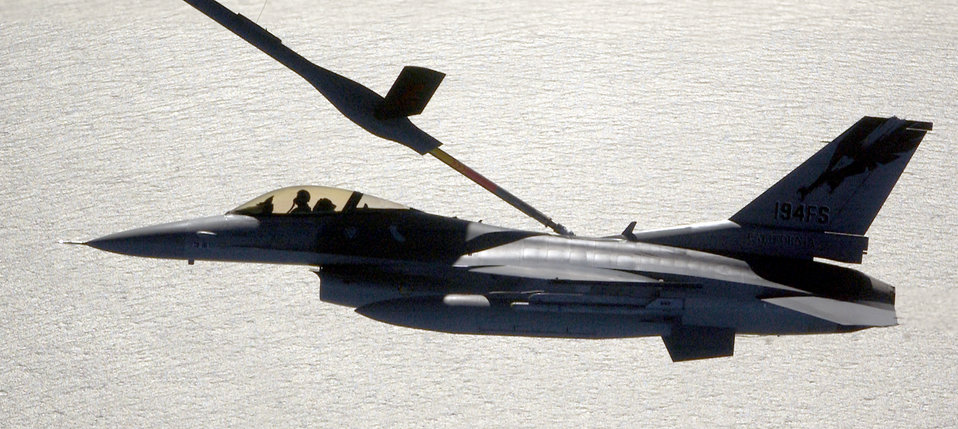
Noble Eagle

OVER THE SAN FRANCISCO BAY -- Major Rob Swertfager gets his F-16 Fighting Falcon refuled by a KC-135E Stratotanker during a Operation Noble Eagle training patrol March 16. Major Swertgager is a pilot with the California Air National Guard's 144th Fighter Wing in Fresno. The KC-135E is assigned to the 940th Aerial Refueling Wing at Beale Air Force Base, Calif.